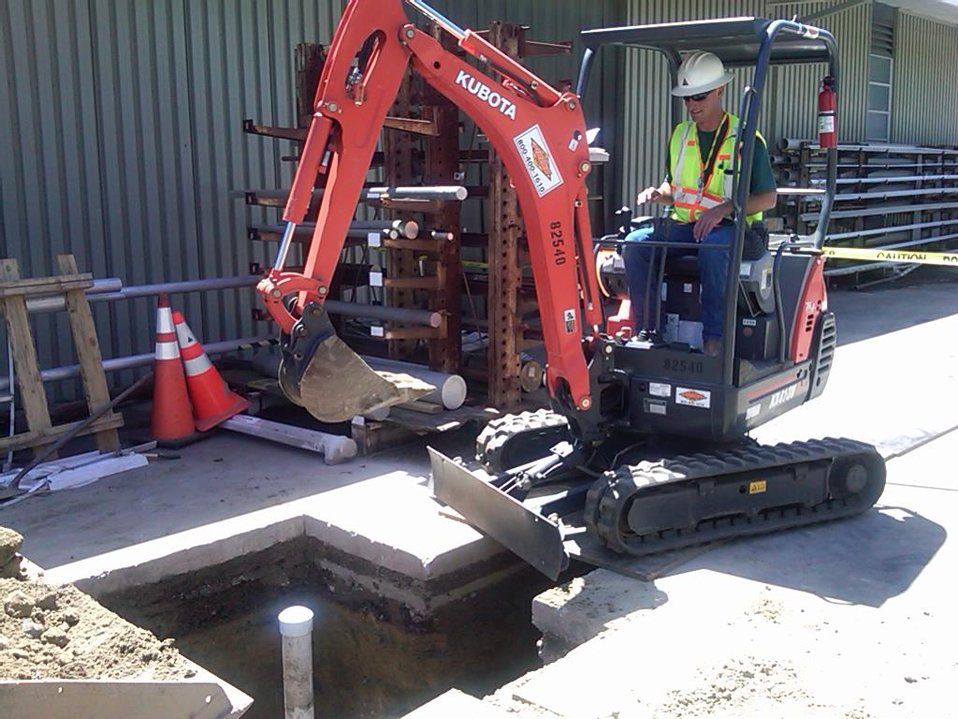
Recovery Act Supports Soil and Debris Cleanup, Groundwater Treatment at SLAC

Recovery Act workers are on track to remove more than 30,000 cubic yards of contaminated soil and debris at the SLAC National Accelerator Laboratory by September 2011.
The Recovery Act invested $14.3 million in legacy cleanup activities at SLAC. In addition to removing contaminated soil and debris that is shipped to local disposal facilities, Recovery Act workers installed three new groundwater treatment systems.